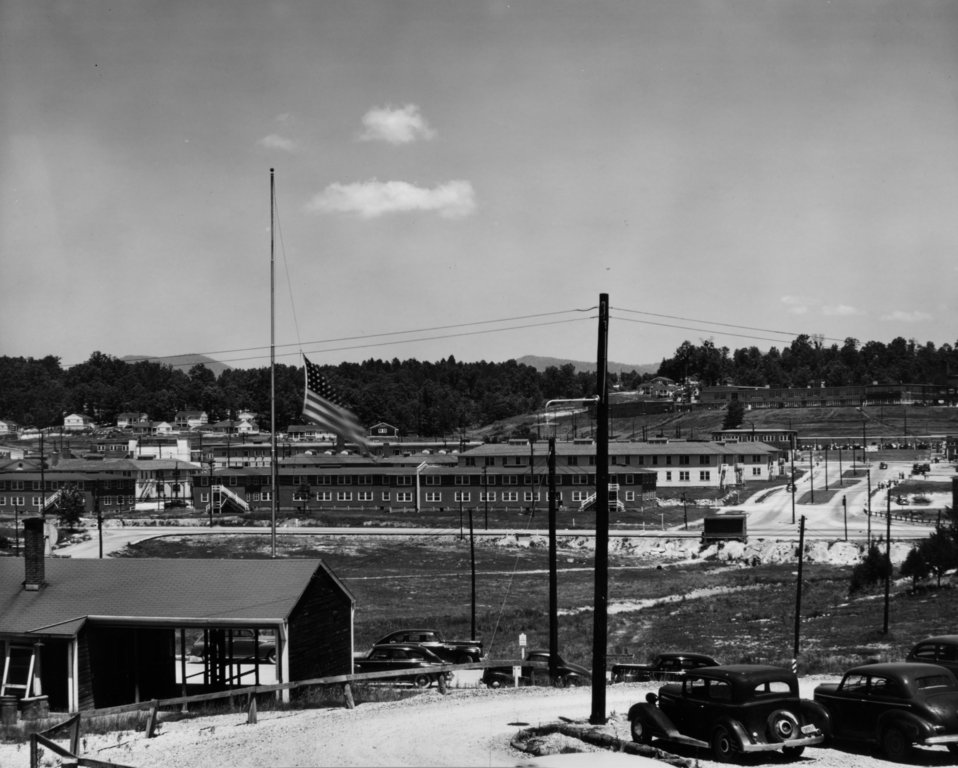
Services at Oak Ridge